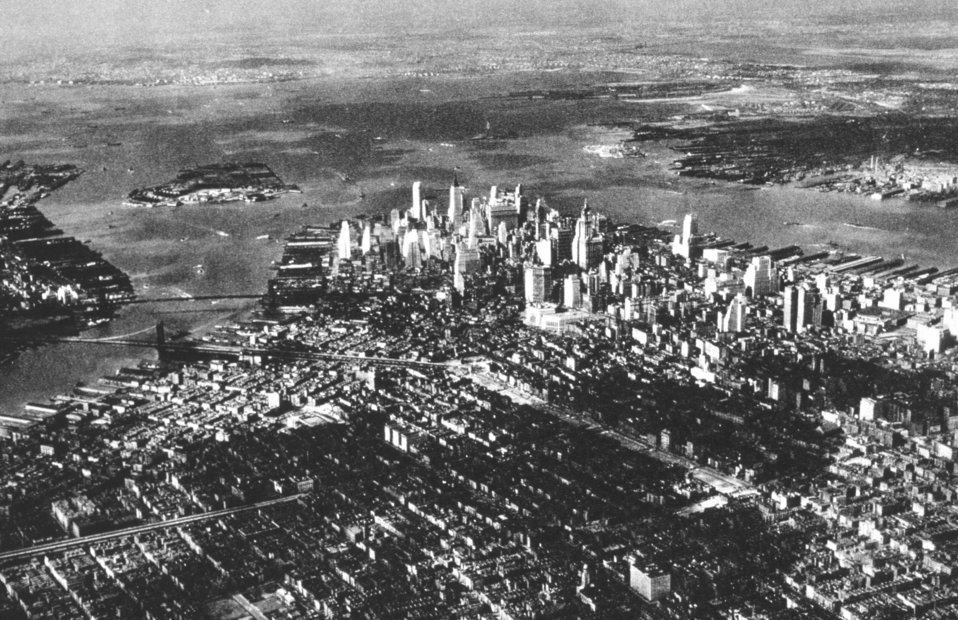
Downtown New York in the early morning sun. In: 'Flug Und Wolken', Manfred Curry, Verlag F. Bruckmann, Munchen, 1932.